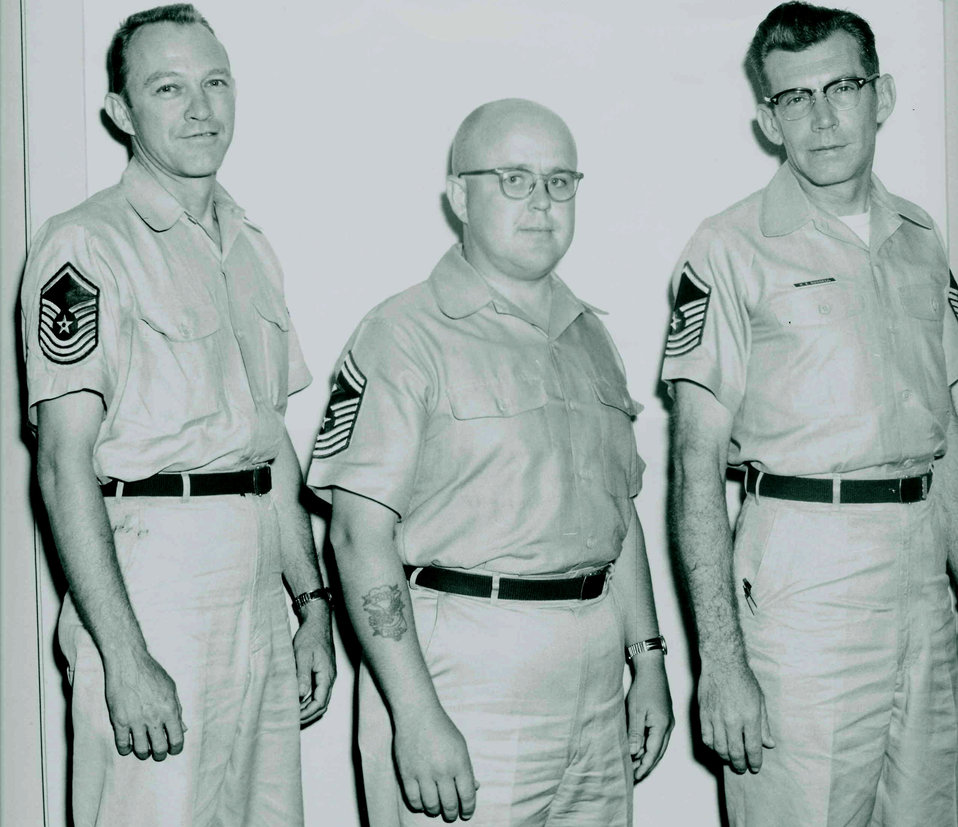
Retired chief reflects on 60 years of service

Chief Master Sgt. Al Kremer (center) enjoys his new chief's stripes June 1, 1960, at Sidi Slimane Air Base, Morocco, where he served as the first sergeant for the 1975 Airways and Air Communications Squadron there. Today, retired Chief Kremer is an Air Force civilian employee at United States Strategic Command headquarters at Offutt Air Force Base, Neb. He recently eclipsed a combined 60 years of service as a military member and civilian employee.